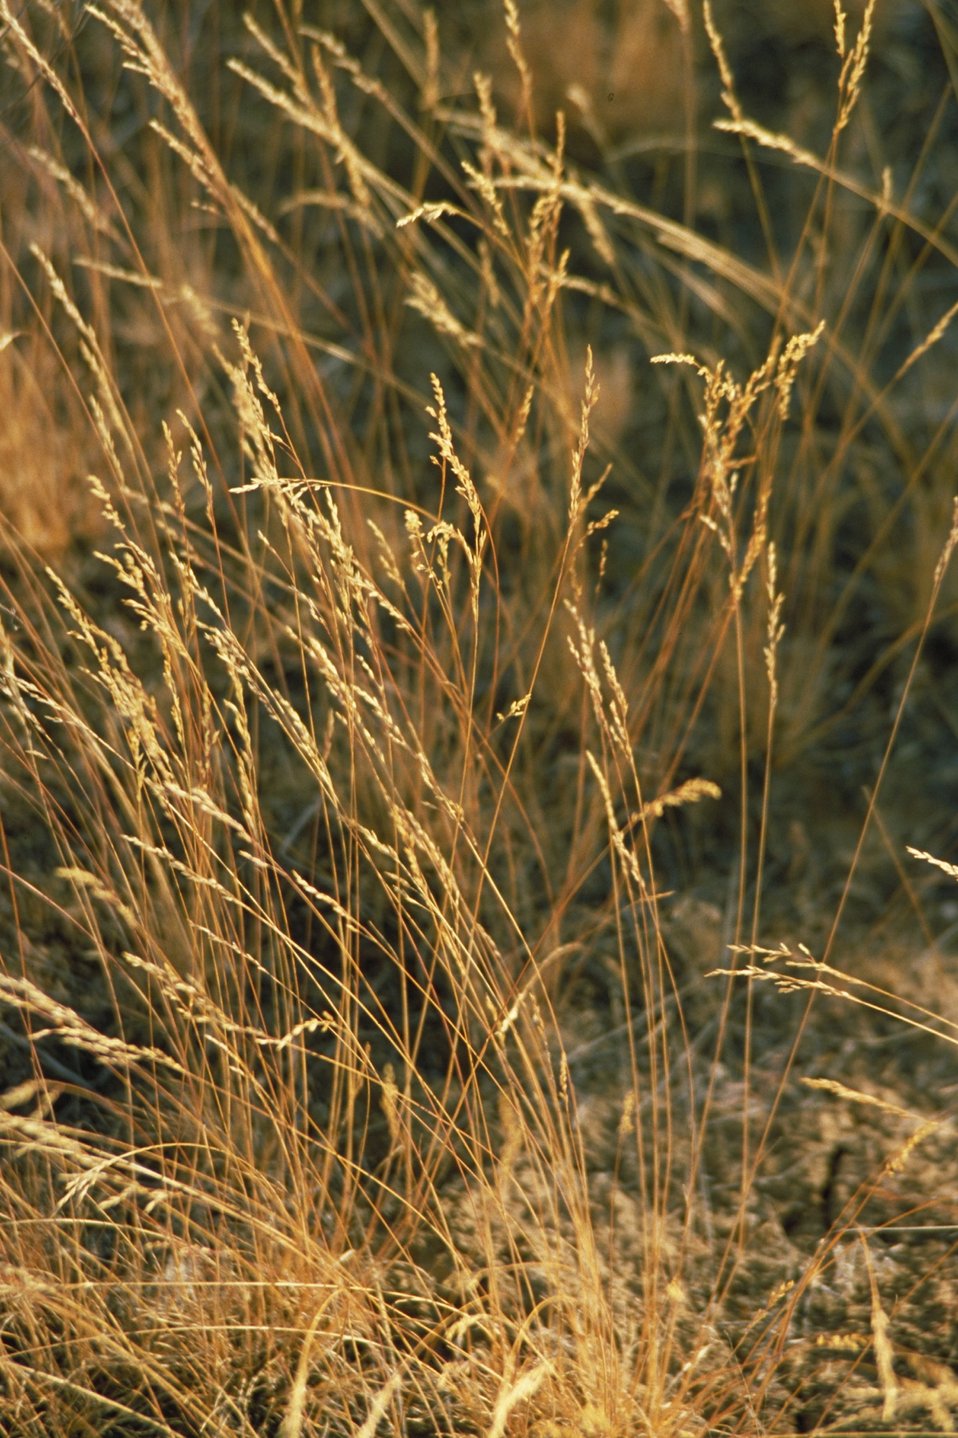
Fuels or grass Fire Season 2000 Lower Snake River District LSRD